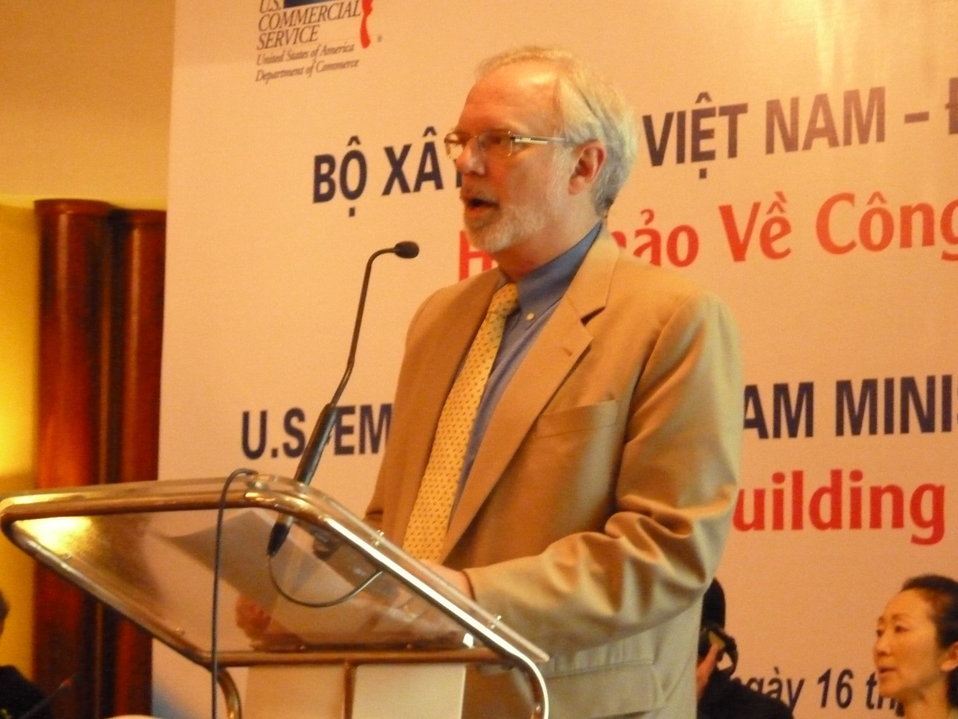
U.S. Ambassador David Shear Speaks at Green Building and Energy Workshop

Hanoi, Vietnam
April 16, 2013